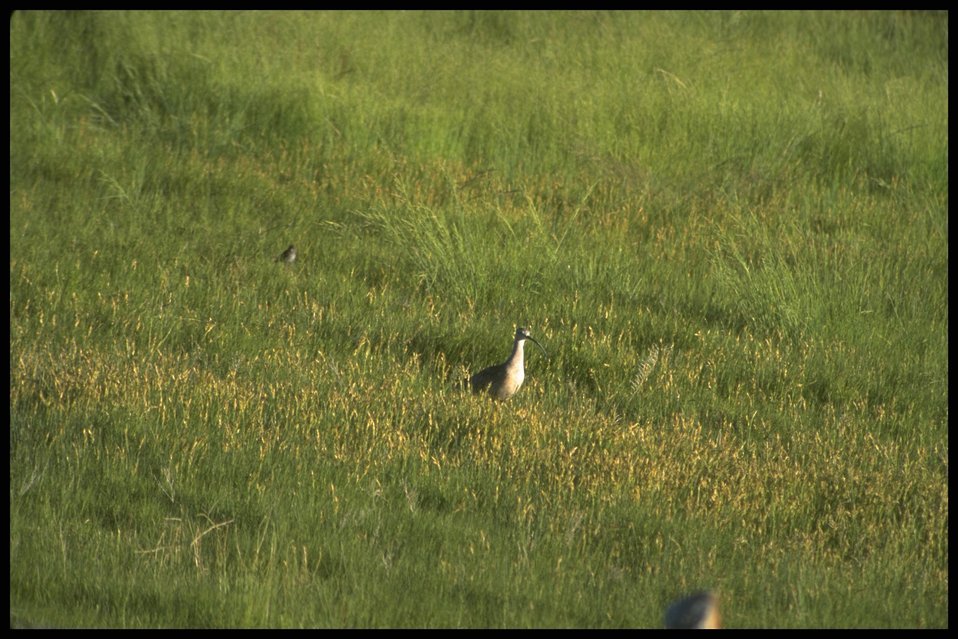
Curled Beaked Shore Bird, Lakeview District.